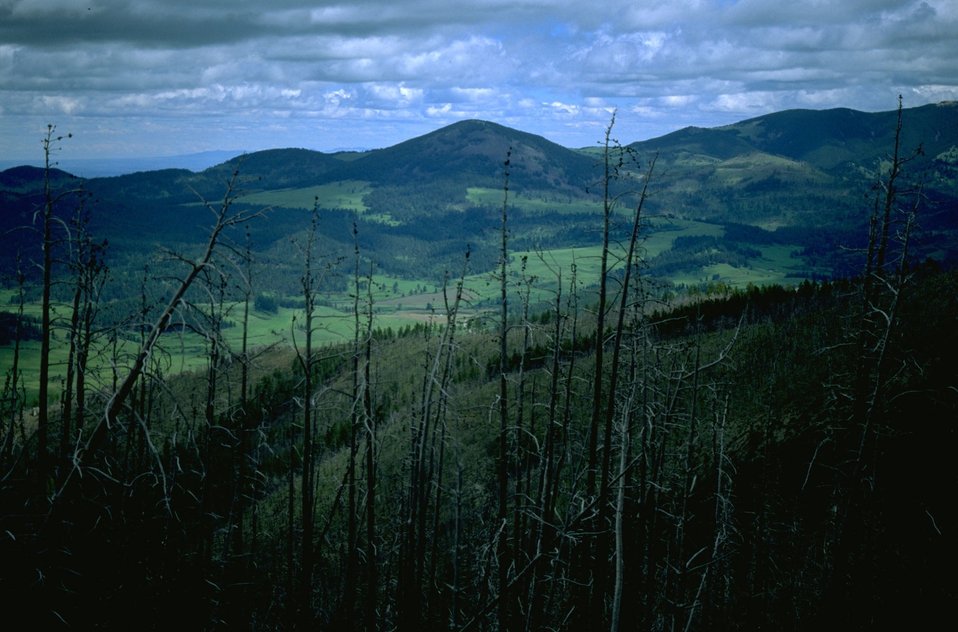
Dead trees overlooking a valley in the Judith Mountains